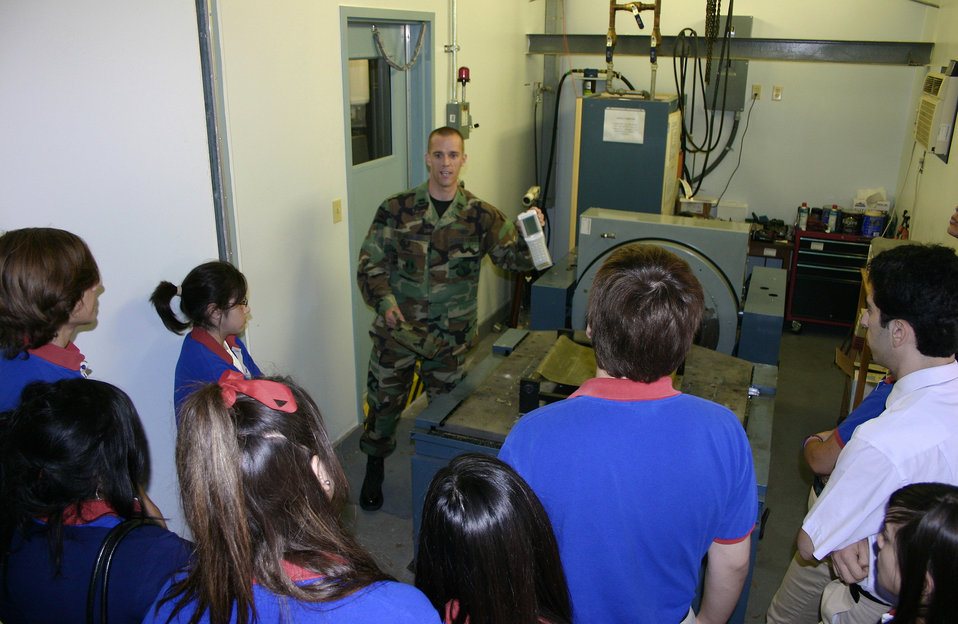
Harmony Science Academy tour

Capt. Gary Beisner, of the Aeromedical Test Branch at Brooks City-Base, Texas, demonstrates a medical test analyzer to students at the Harmony Science Academy May 26. The science and engineering career field management team at the Air Force Personnel Center, Randolph Air Force Base, Texas, have partnered with the San Antonio academy to establish mentors and other volunteers at local bases.